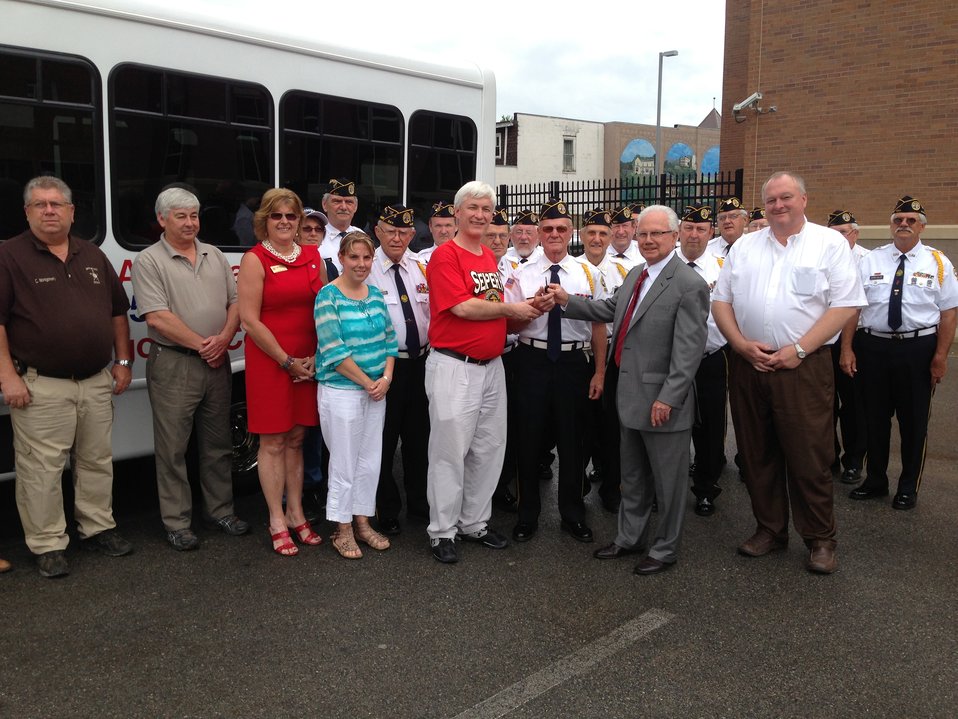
Keys to DAV Van 6-13

Kentucky State Director for Rural Development, Thomas Fern, (grey suit) presents keys for new van to the Magoffin County Judge Executive and the Magoffin County Disabled American Veterans organization.